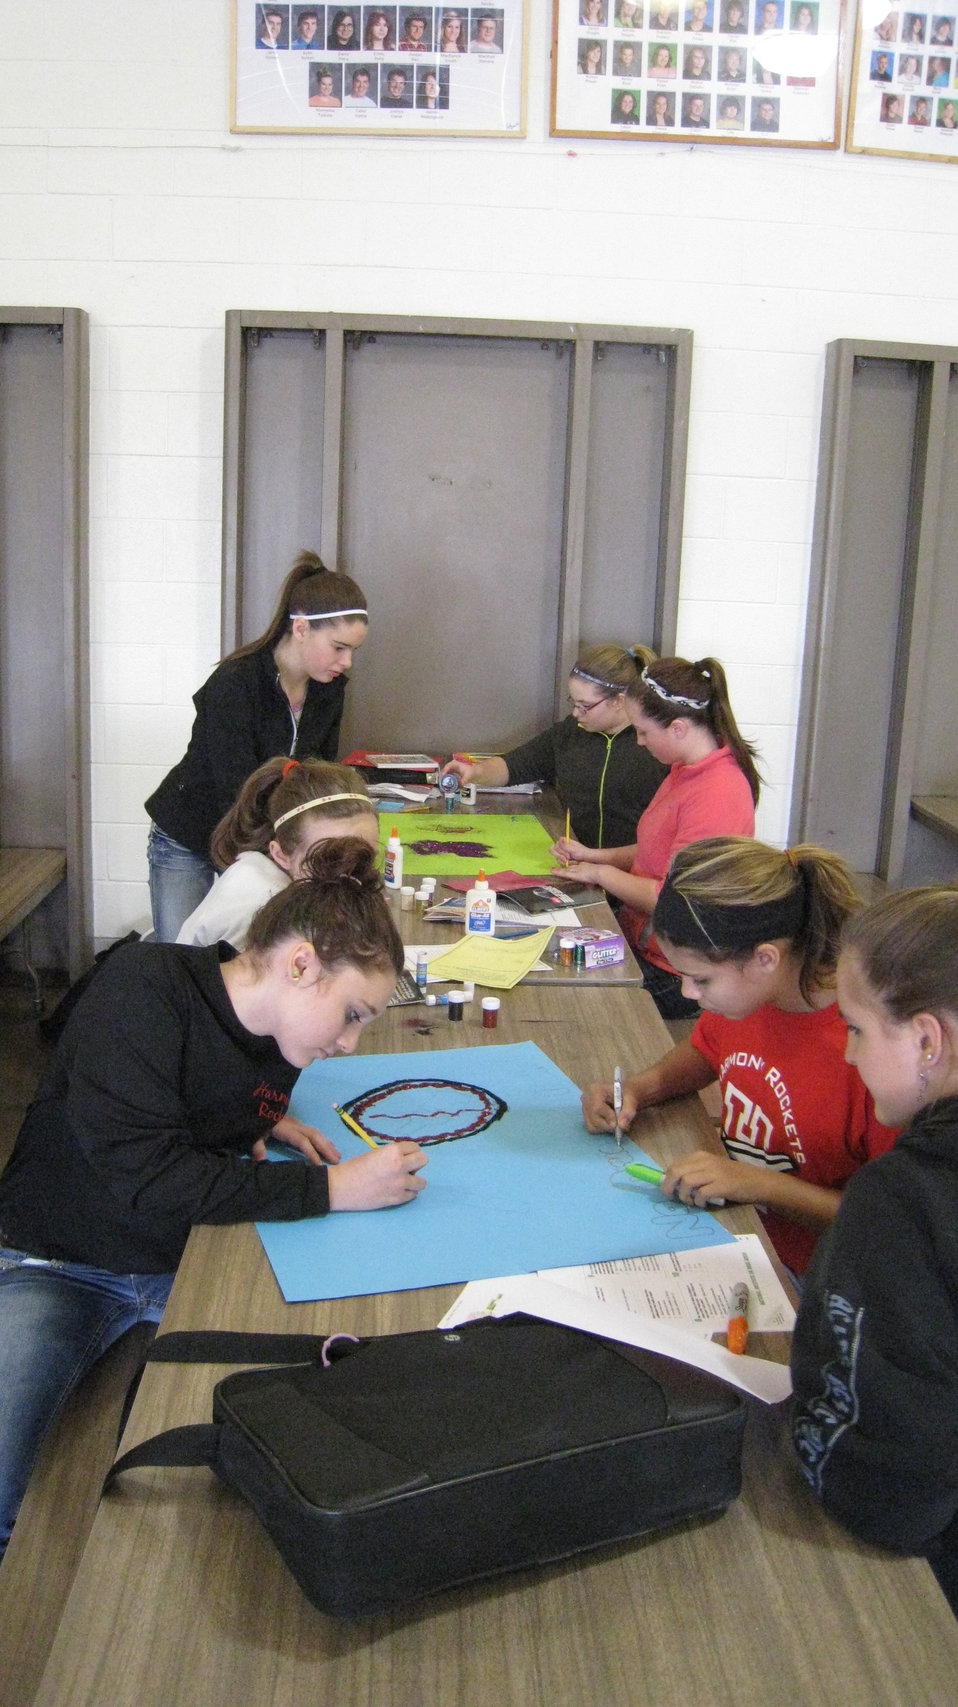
NDFW Event 2014: Van Buren County

Teenagers from the Van Buren County SAFE Coalition's, Youth Leadership Council (YLC) in Keosauqua, Iowa participate in various events during National Drug Facts Week, 2014.